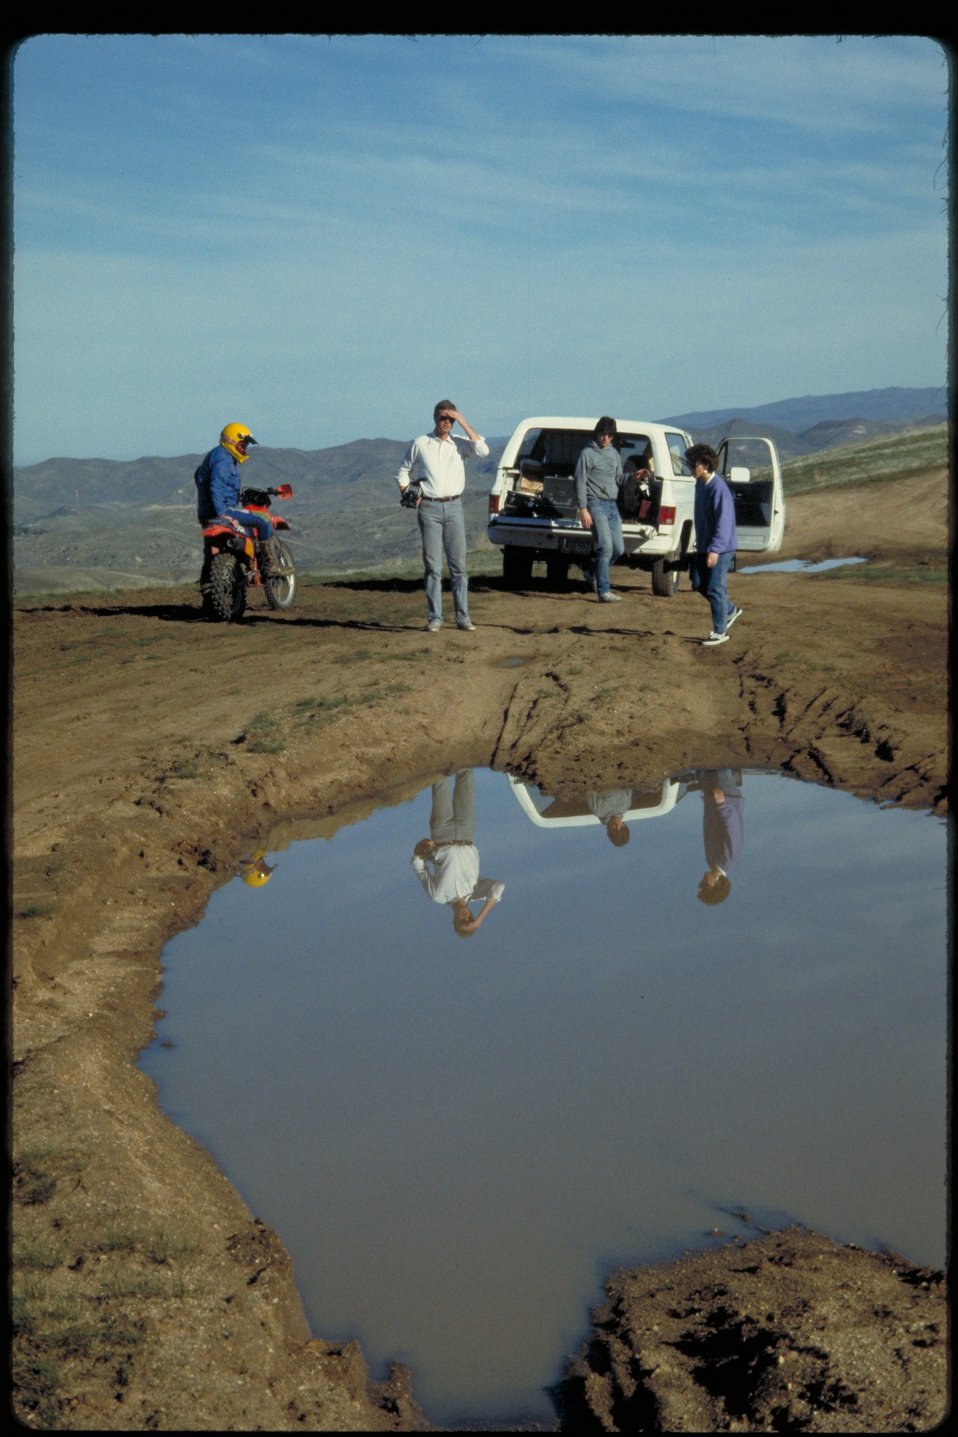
Dirtbikers Boise Front Four Rivers Field Office LSRD Lower Snake River District